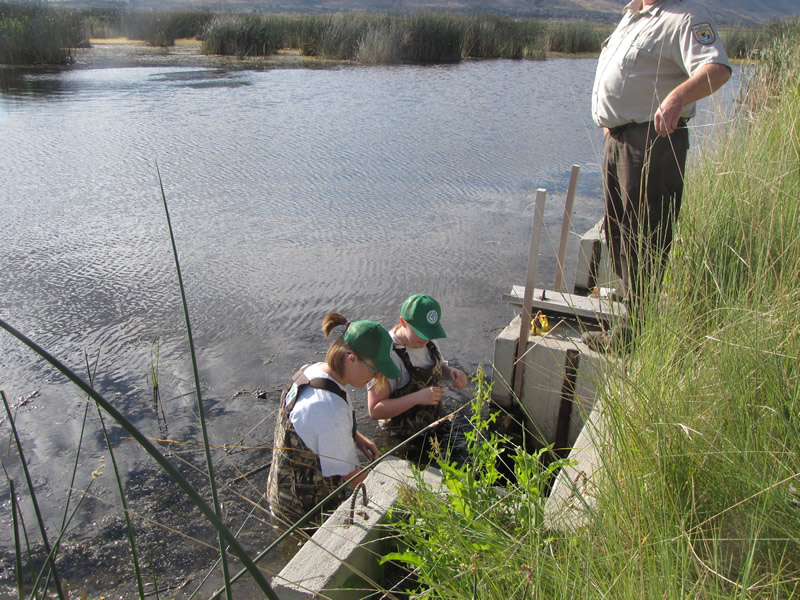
Water Management

Youth Conservation Corps crew cleaned and weeded around a water control structures to eliminate potential safety hazards related to weed growth. Approximately 40 structures were cleared.